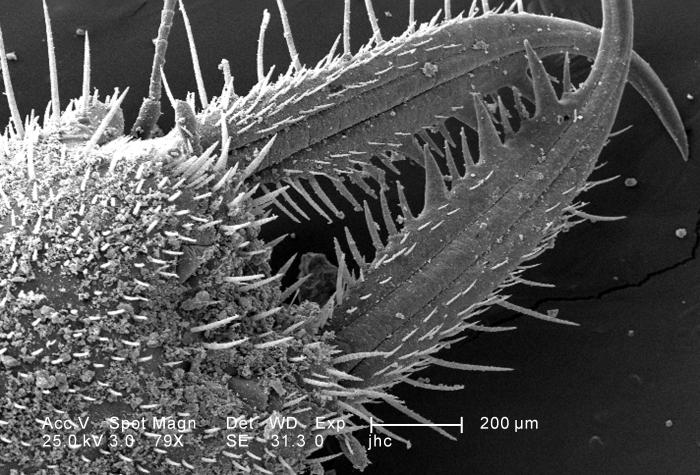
Under a low magnification of 79X, twice that of PHIL 11802, this scanning electron micrograph (SEM) revealed the ultrastructural features found on the ventral exoskeletal surface of this larval-staged antlion's mandibles. This larva is sometimes referred to as a 'doodlebug', because of the trails it leaves in the soft sand as it hunts for prey. This arthropod, i.e., jointed legs, undergoes dramatic morphologic changes when it metamorphoses into a beautiful flying antlion lacewing.